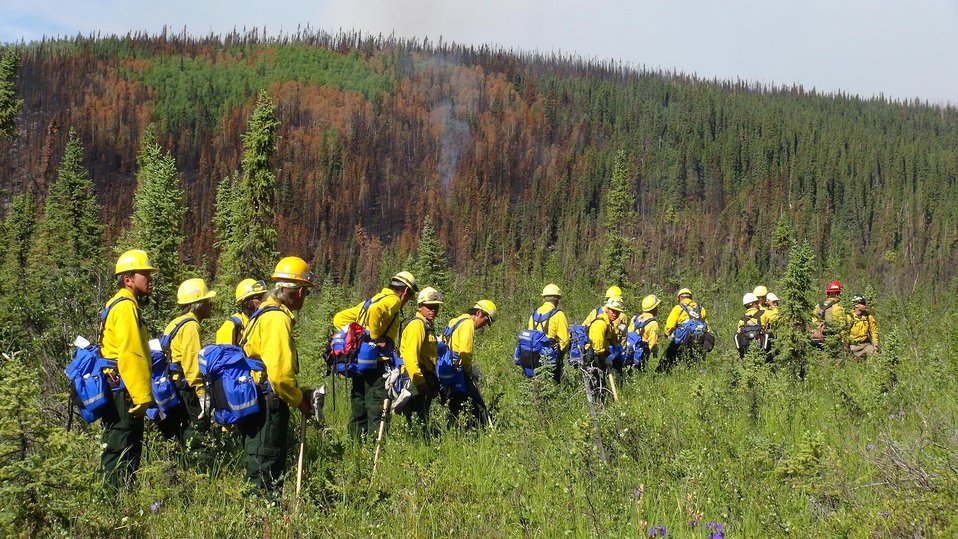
Alaska wildland firefighters enter an active area of the Moon Lake Complex Fires in Tok, AK. The Moon Lake Complex Fires consists of 2 fires, Moon Lake Fire and Tetlin Junction Ridge Fire, along the Alaska and Taylor Highways near Tok, AK. Lightning strikes on Jun. 25, 2013 caused the fires, which have consumed over 49, 959 acres.